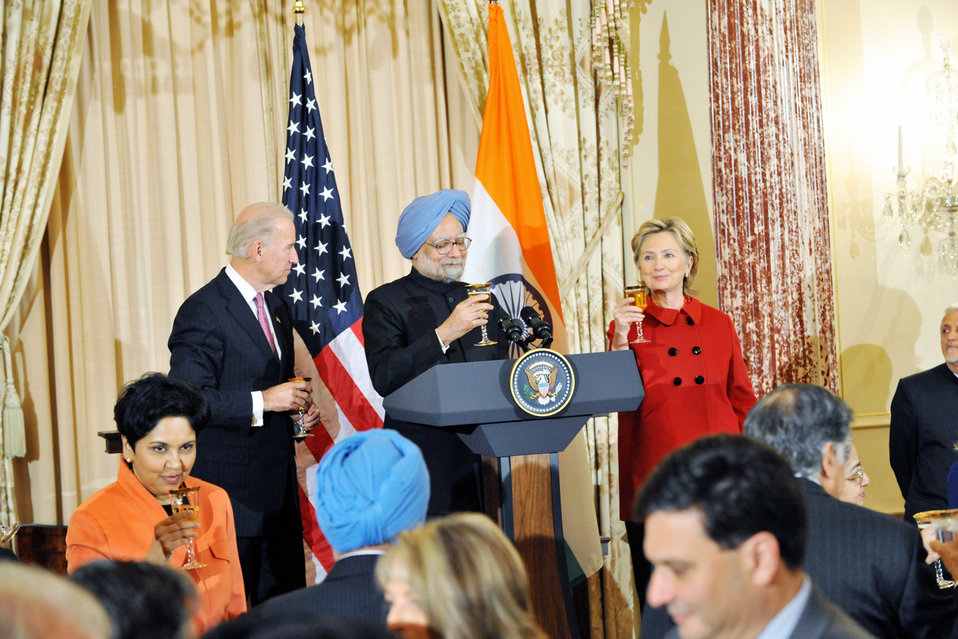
Vice-President Biden, Secretary Clinton Co-Host Social Lunch in Honor of Indian Prime Minister

U.S. Vice-President Joe Biden Dr. Jill Biden co-host a social lunch with U.S. Secretary of State Hillary Rodham Clinton in honor of Indian Prime Minister H.E. Dr. Manmohan Singh and Dr. Gurusharan Kaur at the U.S. Department of State in Washington, DC November 24, 2009.